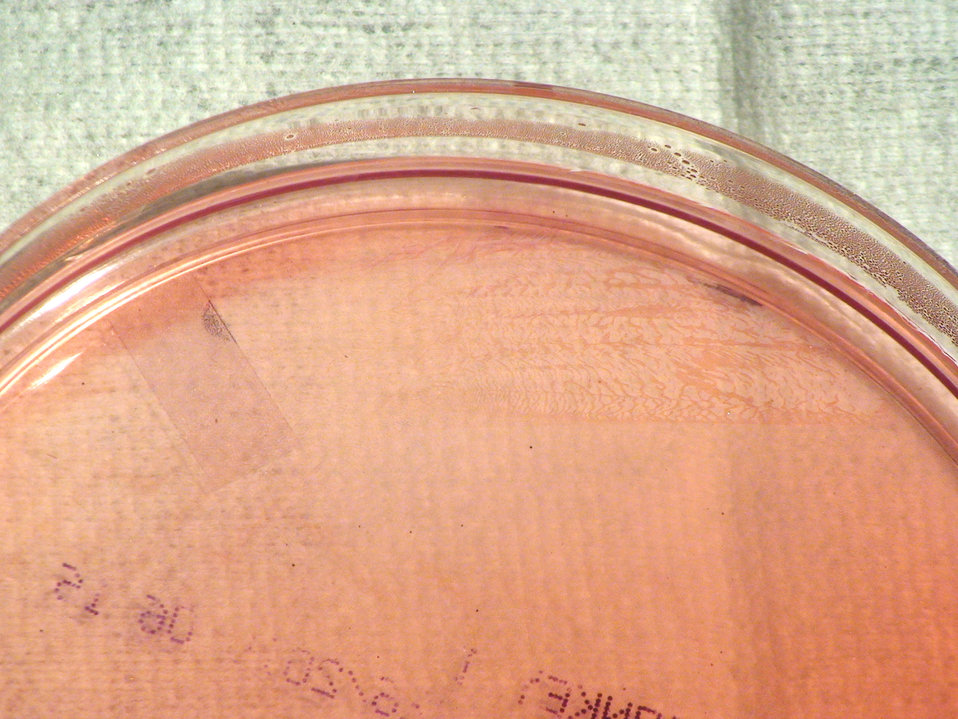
A closer view of PHIL 12481, this photograph depicts the colonial morphology displayed by Gram-negative Brucella suis bacteria, which was grown on a medium of MacConkey agar, for a 24 hour time period, at a temperature of 37�C. Also see PHIL 12482, for an additional close view of these bacterial colonies. Brucella spp. bacteria are pathogenic towards humans, and cause a disease known as brucellosis.